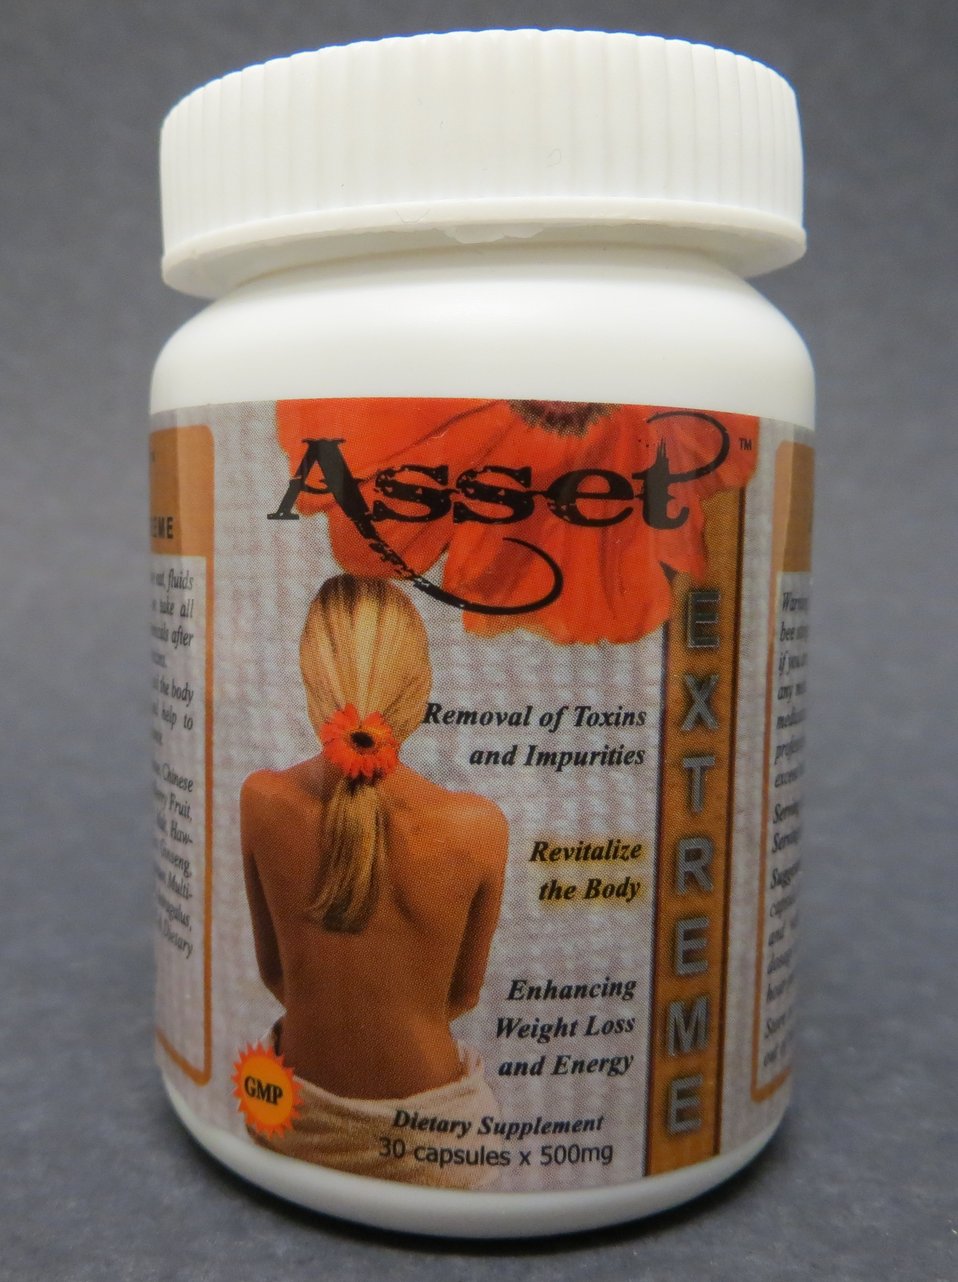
Asset Extreme

December 19, 2013 - The FDA is advising consumers not to purchase or use 'Asset Extreme,' a product promoted and sold for weight loss. The product was found to contain undeclared sibutramine. For more information, go to www.fda.gov/Drugs/ResourcesForYou/Consumers/BuyingUsingMe...

And read this Consumer Update: Beware of Fraudulent ‘Dietary Supplements’